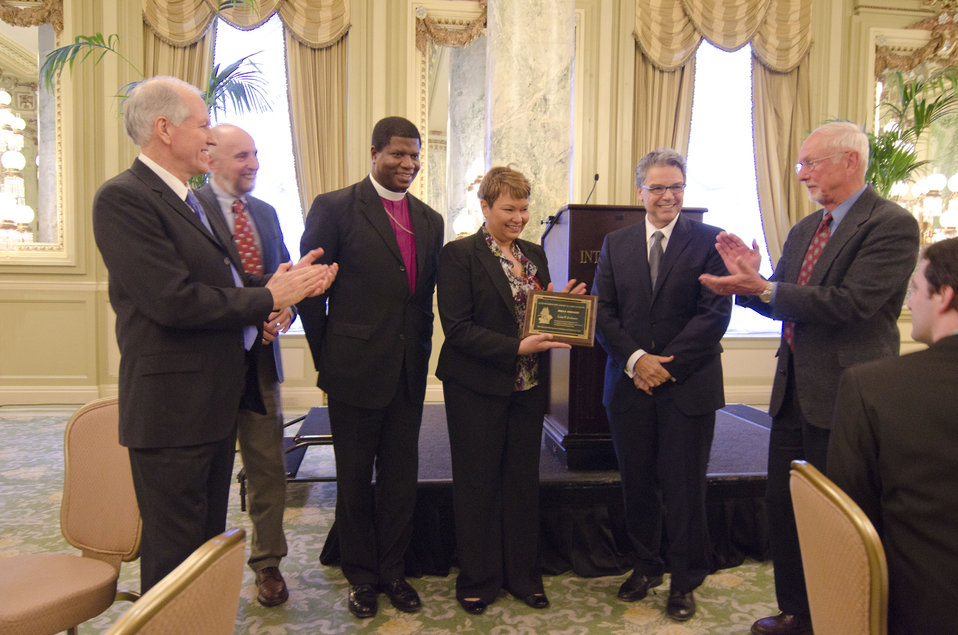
2011-05-05 NRCCCPrayerBreakfast 036

US EPA Administrator Lisa P. Jackson (center) smiles as she accepts the Steward of God's Creation Award from the National Religious Coalition on Creation Care